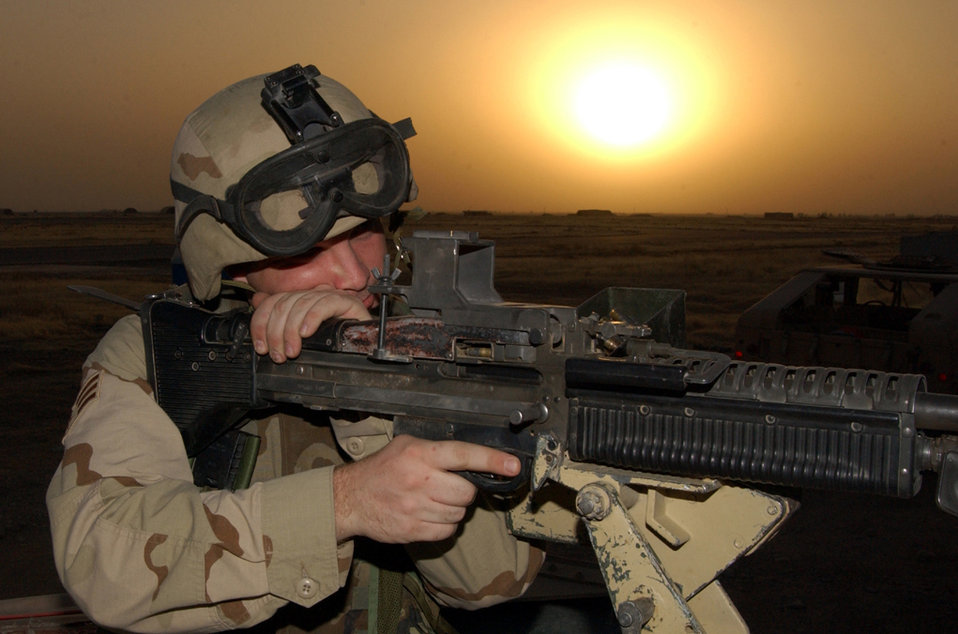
Defender

KIRKUK AIR BASE, Iraq -- Senior Airman Derick Gooch defends the fence line here June 26. Airman Gooch is assigned to the base's 506th Expeditionary Security Forces Squadron.